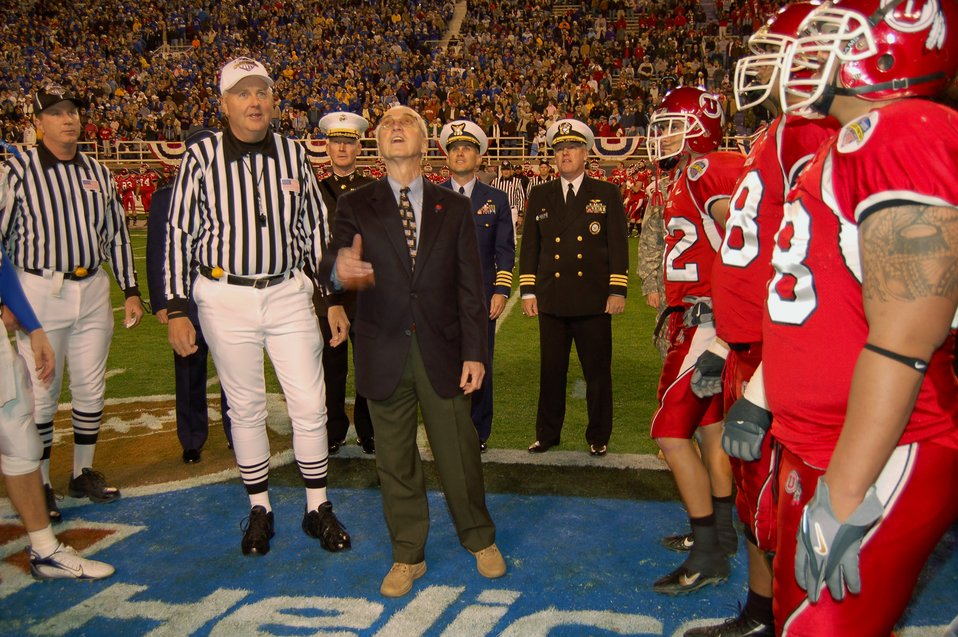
Deputy defense secretary named Great American Patriot

Deputy Secretary of Defense Gordon England tosses the coin before the start of the Bell Helicopter Armed Forces Bowl at Amon G. Carter Stadium in Fort Worth, Texas, Dec. 23. The University of Utah Utes defeated the Golden Hurricanes of the University of Tulsa, 25-13.